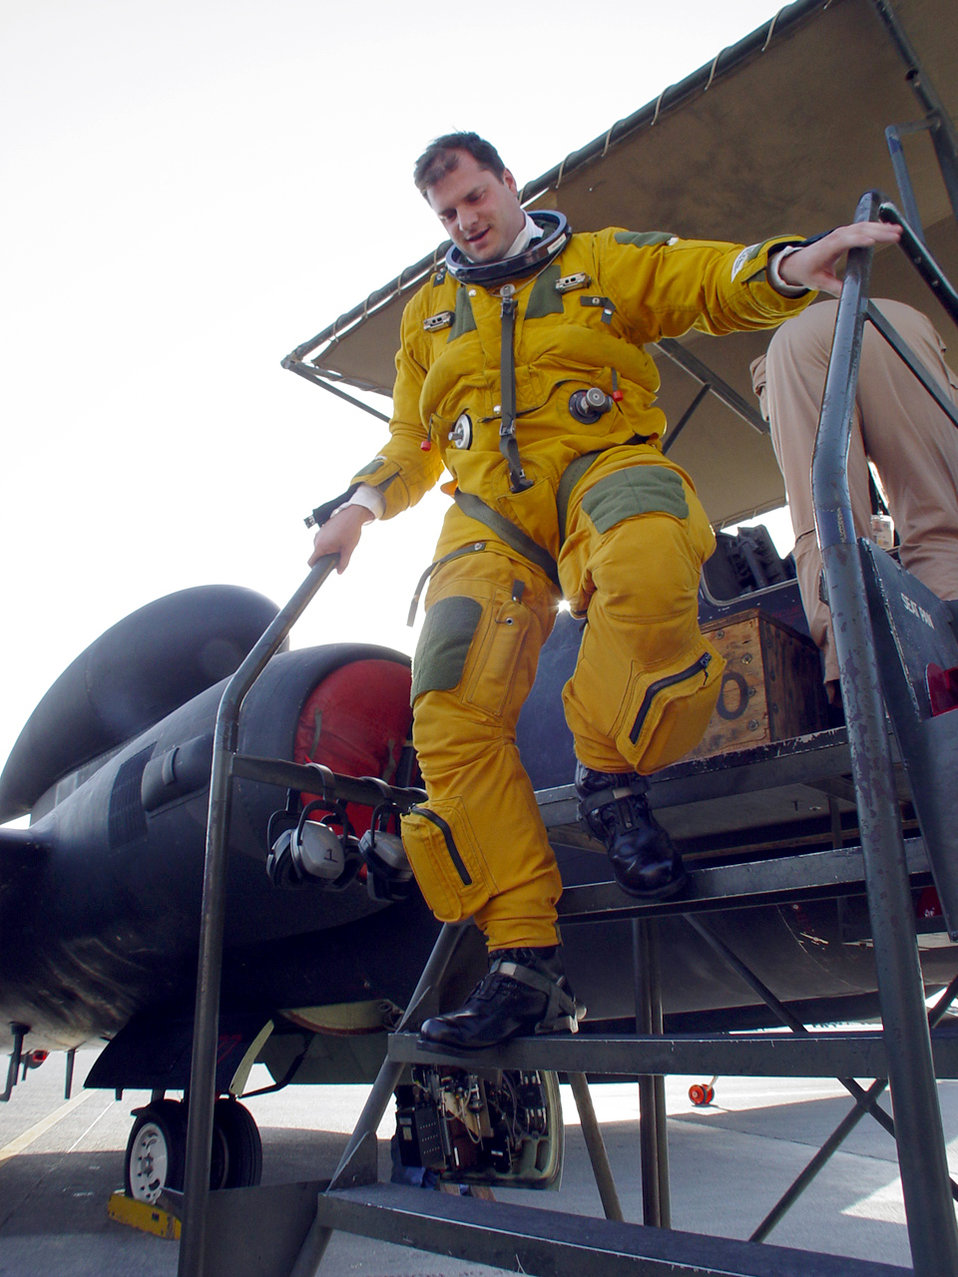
Getting hitched

SOUTHWEST ASIA -- Capt. Jeffrey Wright exits a U-2 Dragon Lady after a flight Feb. 5. The U-2 is a high-altitude, multi-intelligence reconnaissance aircraft that can fly above 70,000 feet. The jet provides near-real-time imagery and signals intelligence to warfighters and national authorities. Captain Wright is a U-2 pilot with the 99th Expeditionary Reconnaissance Squadron and is deployed from Beale Air Force Base, Calif.